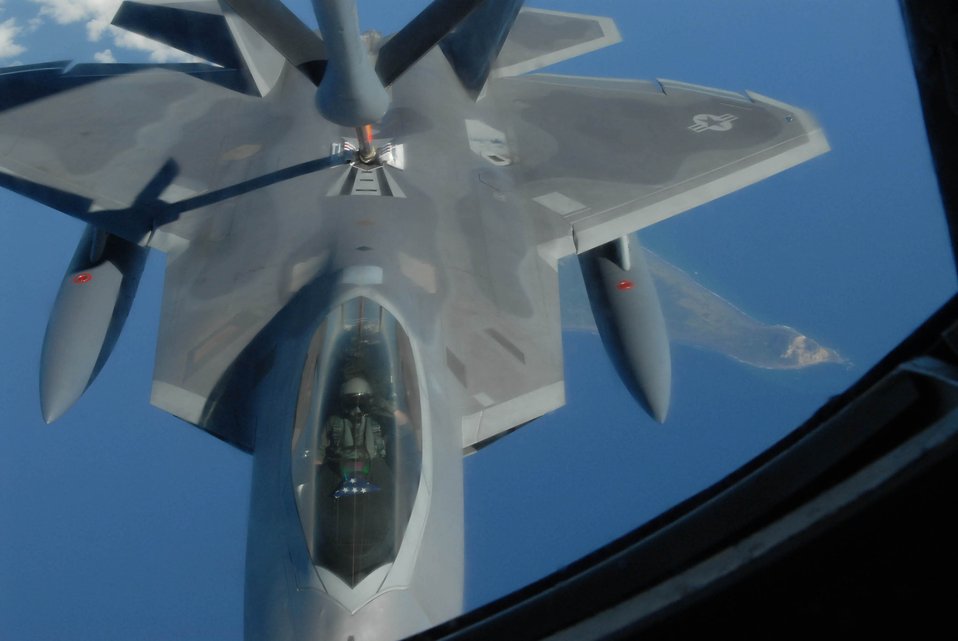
Refueling the Raptor

An F-22 Raptor receives fuel from a 909th Air Refueling Squadron KC-135 Stratotanker over Iwo Jima Feb. 18 while en route to Kadena Air Base, Okinawa, Japan. This was the first-ever overseas deployment of the F-22. F-22s from the 27th Fighter Squadron at Langley Air Force Base, Va., are deployed to Kadena AB as part of an Air Expeditionary Force rotation.